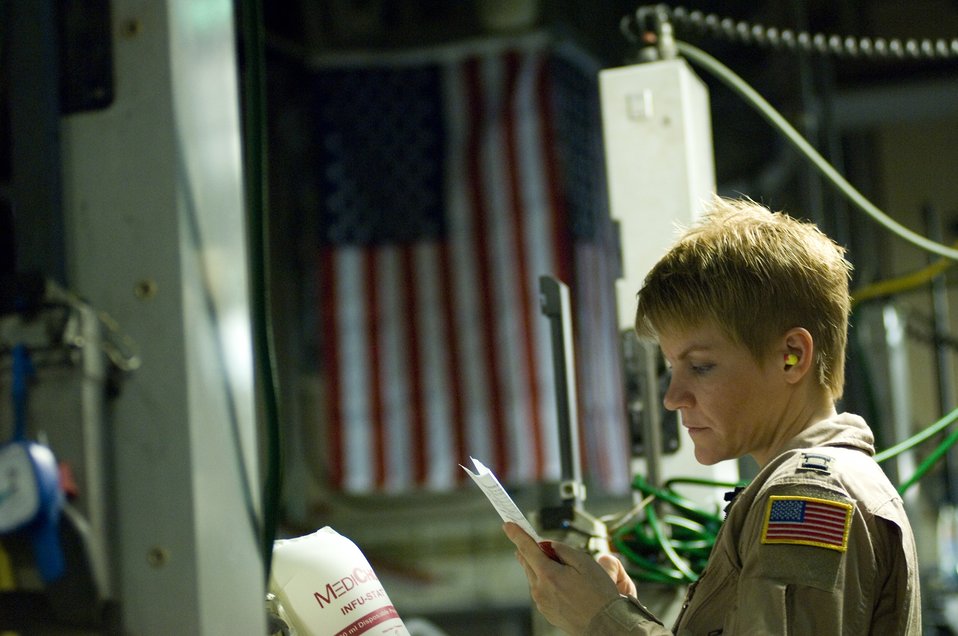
Medical teams provide priceless gift

Capt. Jacqueline Cole monitors the condition of a critical-care patient Feb. 14 while traveling on a C-17 Globemaster III from Balad Air Base, Iraq, to Landstuhl, Germany, where he will receive further care for his wounds. Captain Cole is a member of the Critical Care Air Transport Team assigned to the 332nd Expeditionary Operations Group.